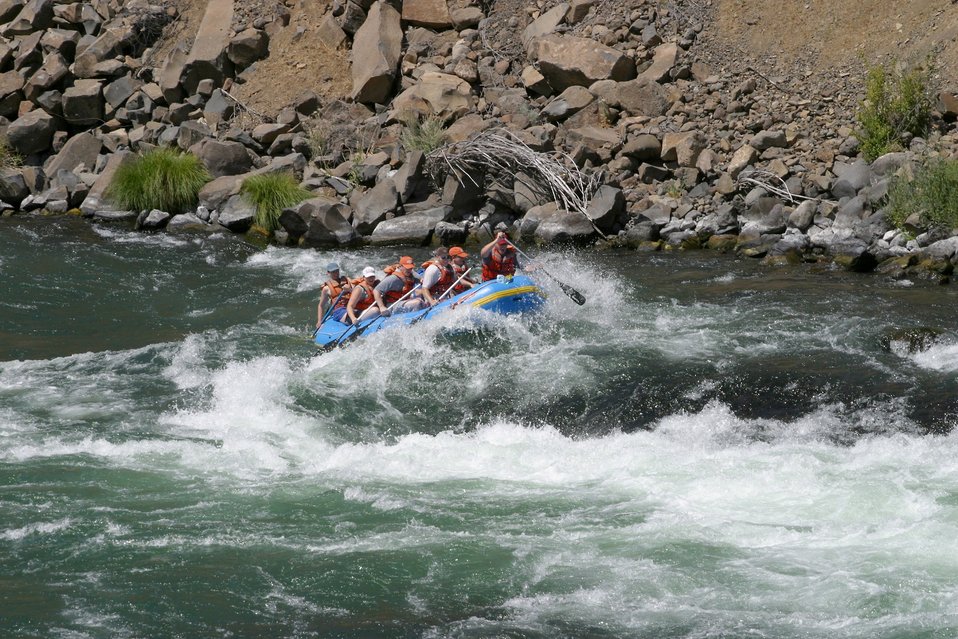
Boxcar Rapids class III, has large waves with a small drop that form turbulent currents. 7/26/03 Pelton Dam 3600 cfs: Moody Rapids 4300 cfs.